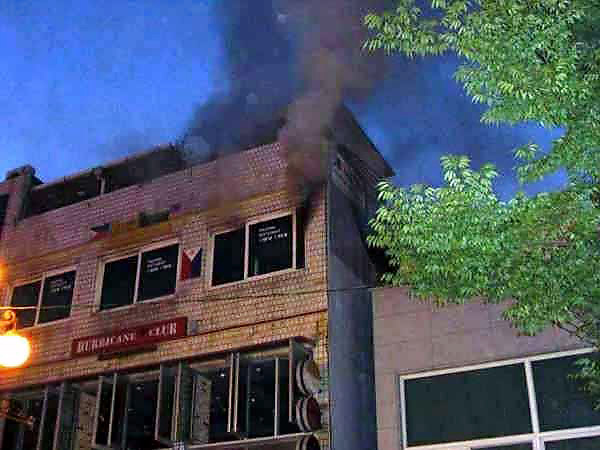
Osan Airmen save lives, property

Smoke engulfs a restaurant May 30 outside of Osan Air Base, South Korea. Members of the 51st Security Forces Squadron town patrol section risked personal safety by entering the building to ensure a complete evacuation of patrons.